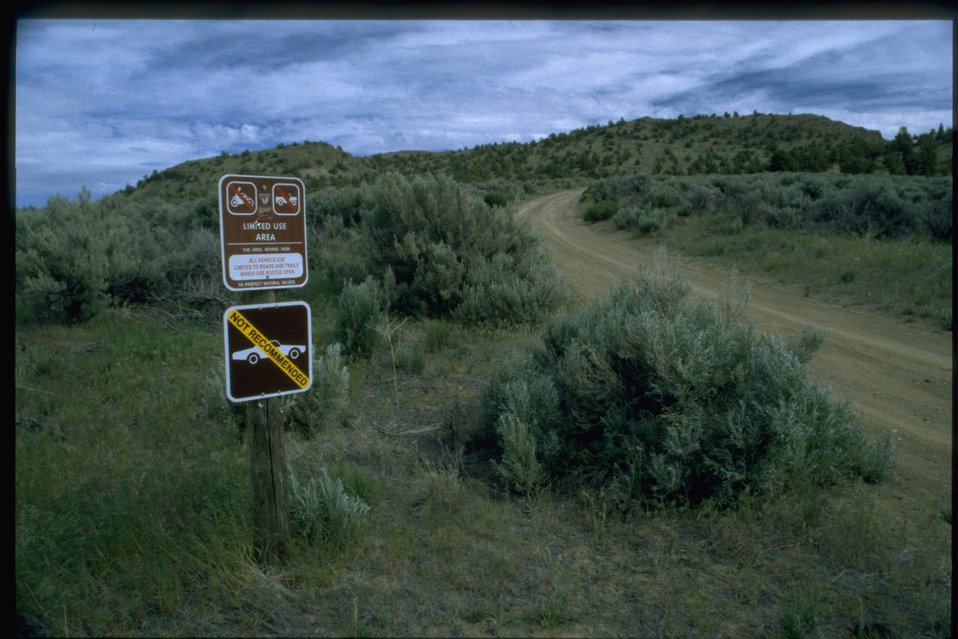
BLM Regulatory Limited Use Sign at Black Hills.